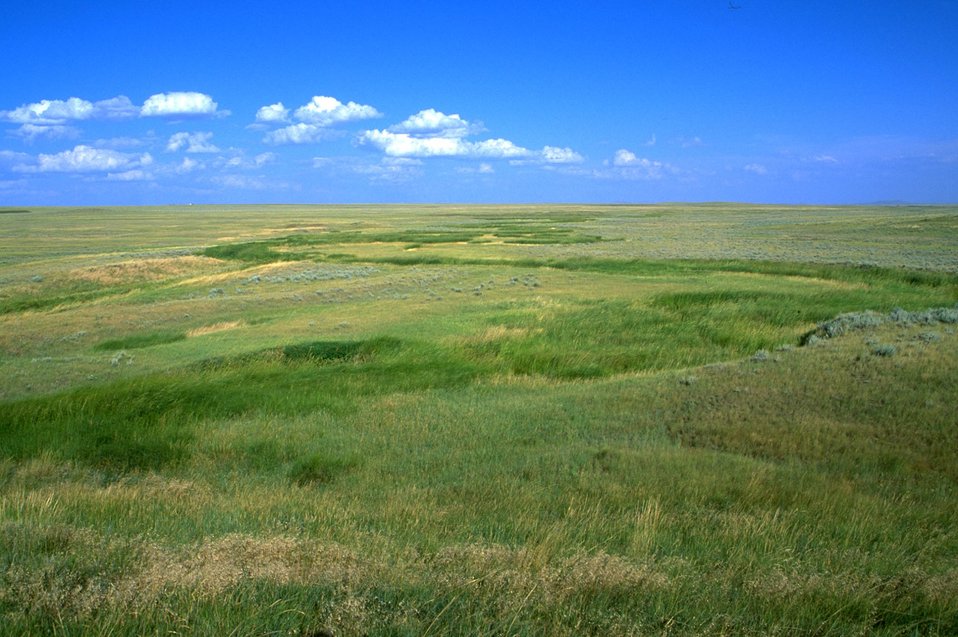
Prairie Cordgrass riparian Battle Creek